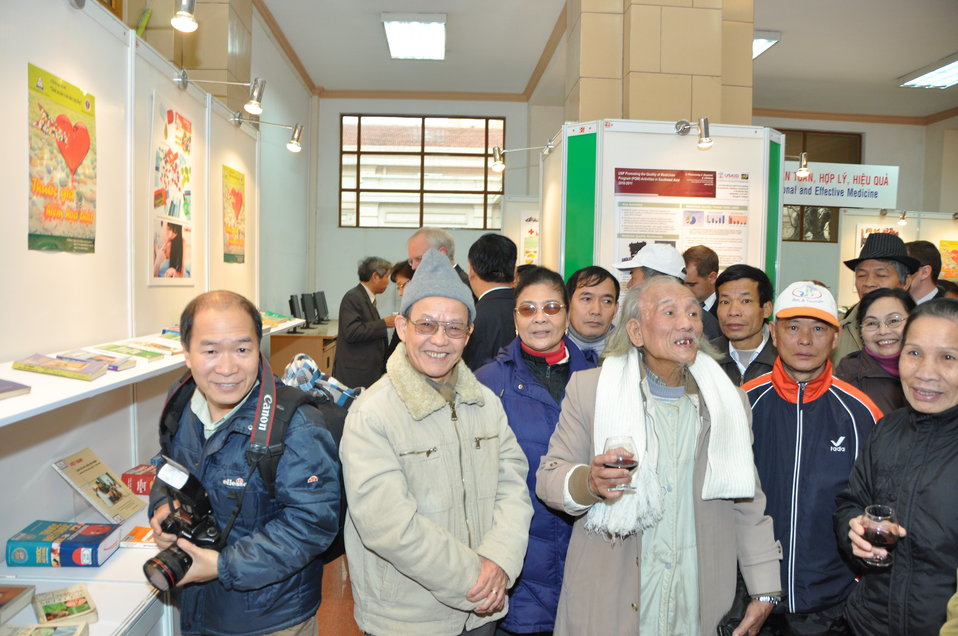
U.S. Ambassador David Shear opens safe medicine exhibition in Hanoi

Safe Medicine Exhibition